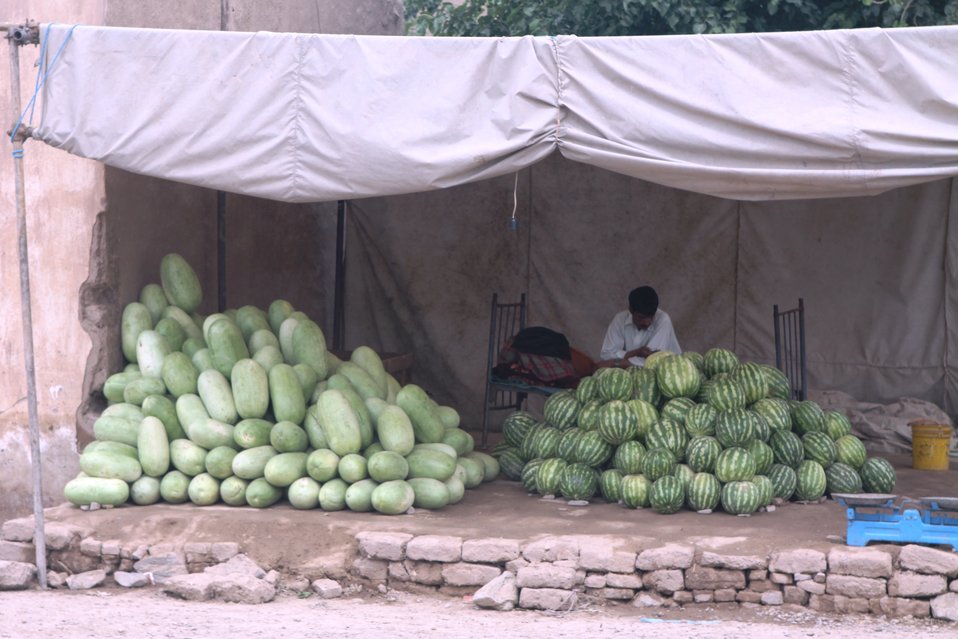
100525 Hirat Marble Conference 591